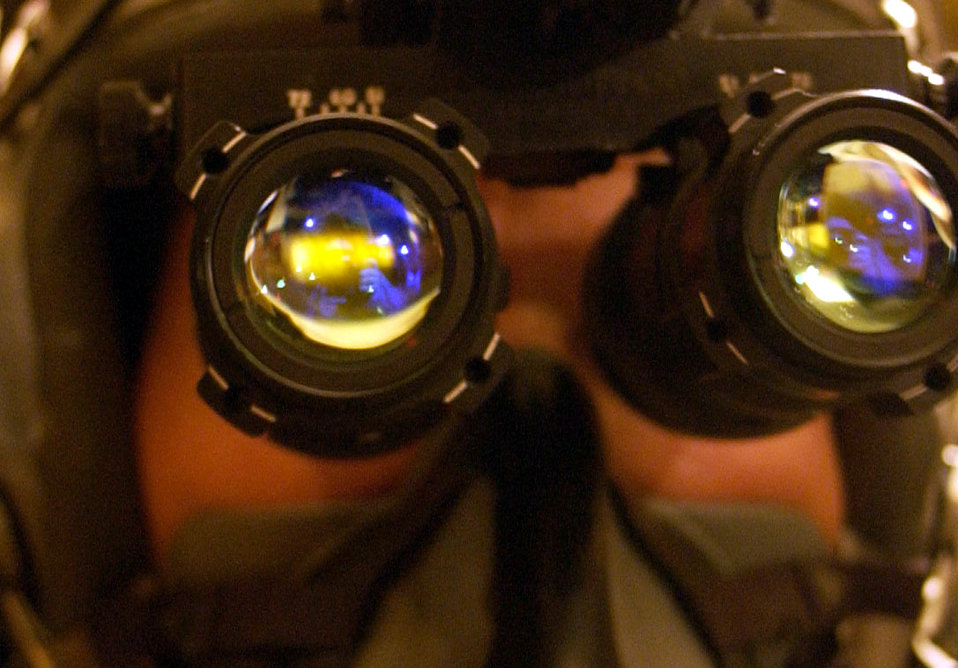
Night vision

OPERATION IRAQI FREEDOM -- An F-16 Fighting Falcon pilot, assigned to the 410th Air Expeditionary Wing at a forward-deployed location, checks his night vision goggles for flight.